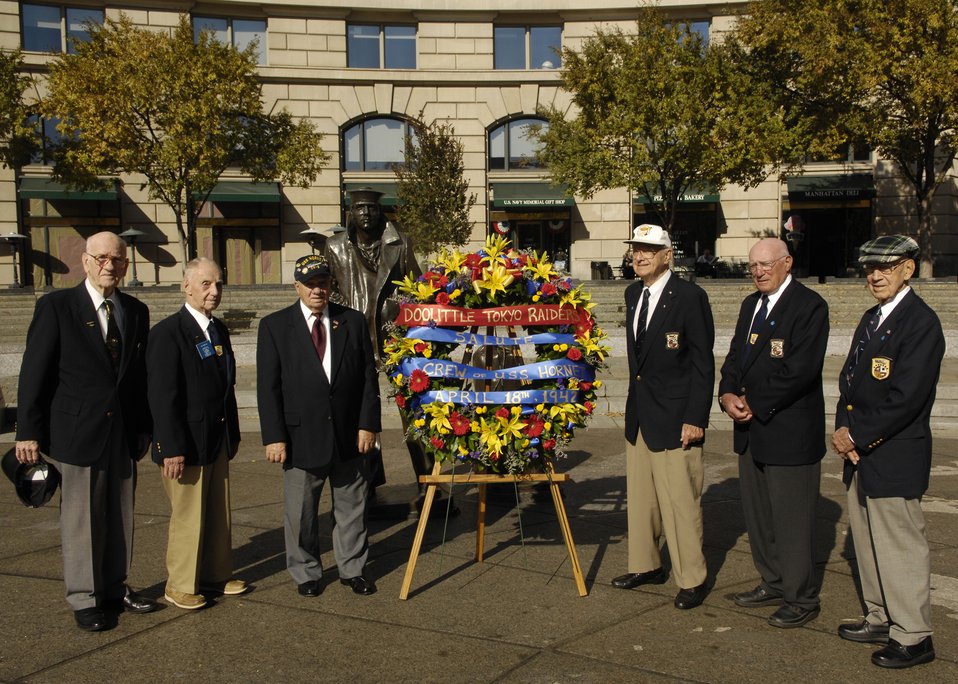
Doolittle Raiders

Members of the Doolittle Raiders pose for a photo after a wreath-laying ceremony Nov. 9, in observance of Veterans Day in Washington, D.C.